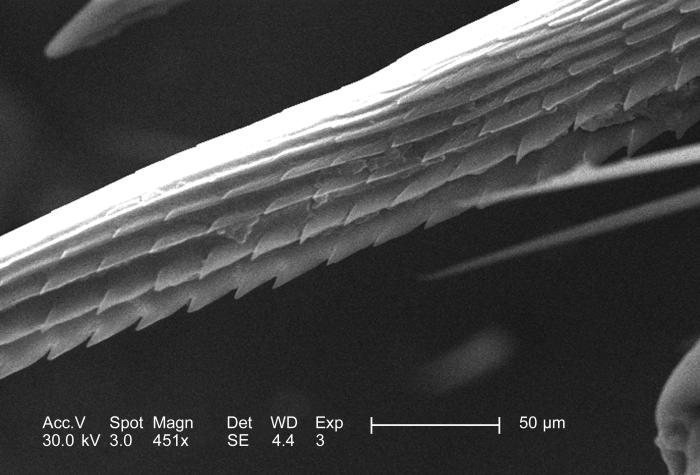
At a moderately high magnification of 451x, this scanning electron micrograph (SEM) depicted the anatomical morphology found in the exoskeletal adnexal barb of an unidentified roach found in a Decatur, Georgia home. The barb-like protuberances were chitinous exoskeletal extensions found on this insect's appendages. The larger 'spikes' such as the one seen here, were probably protective in nature, while the smaller adjacent 'hairs', are sensorial structures known as 'setae', and provide the organism with sensations indicative of variations in its environment such as thermal, chemical, and mechanical changes.